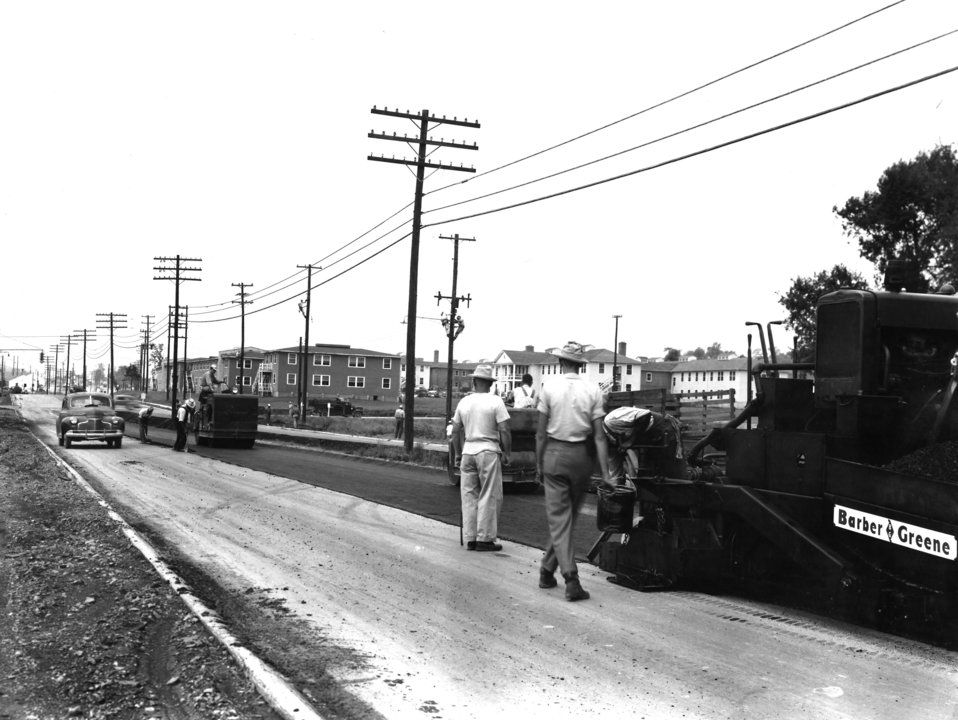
Street Paving on Oak RidgeTurnpike Looking West 1943

S-25 DOE photo Ed Westcott 1943 Oak Ridge Tennessee